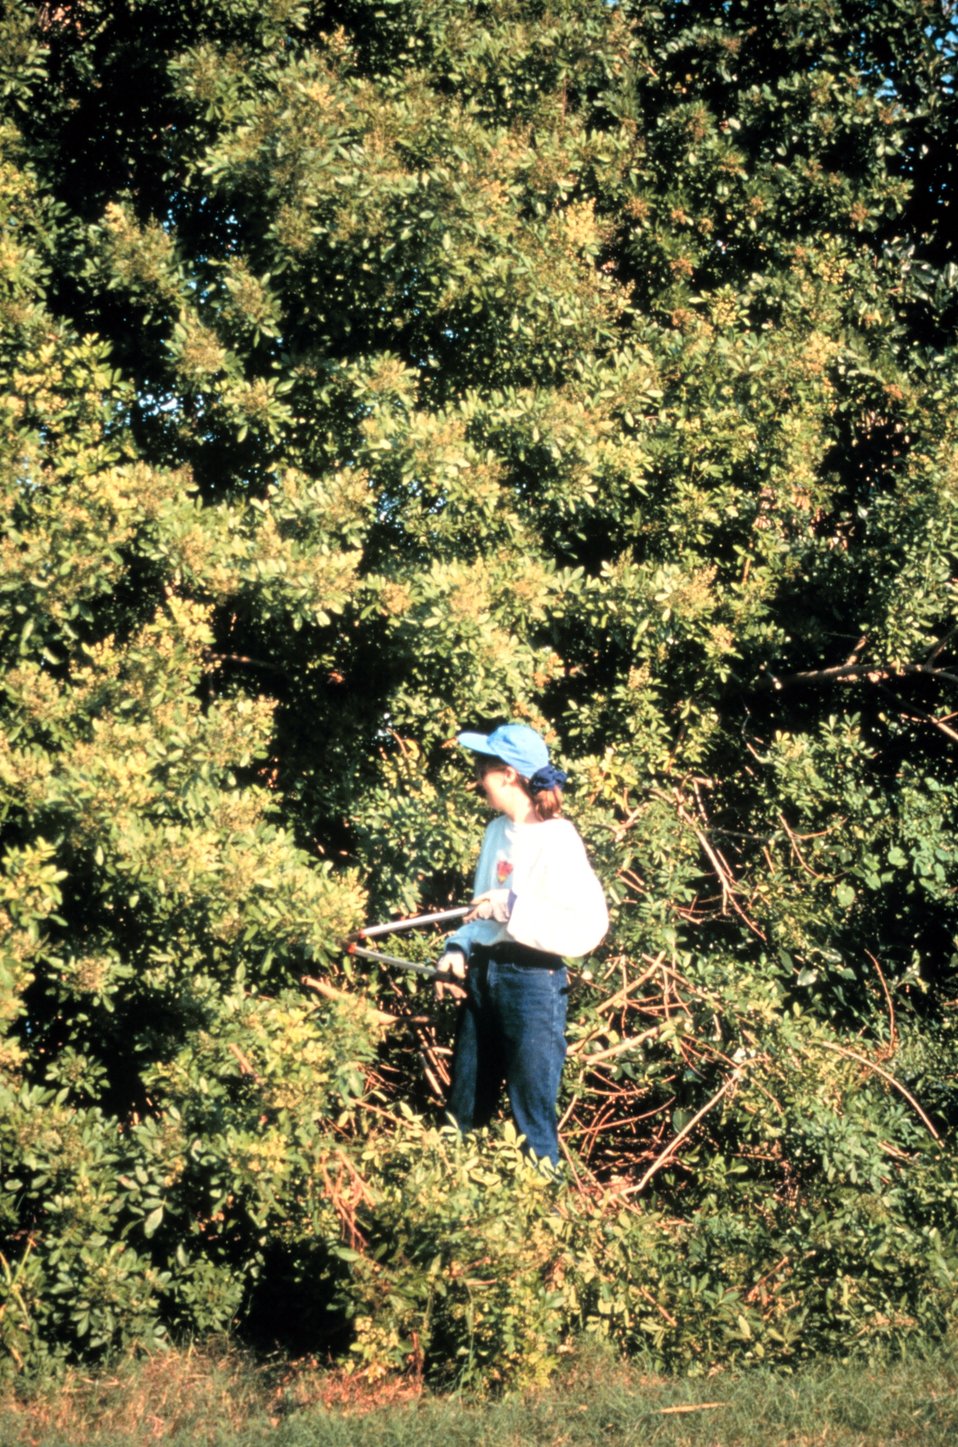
Volunteers cut Brazilian Pepper.